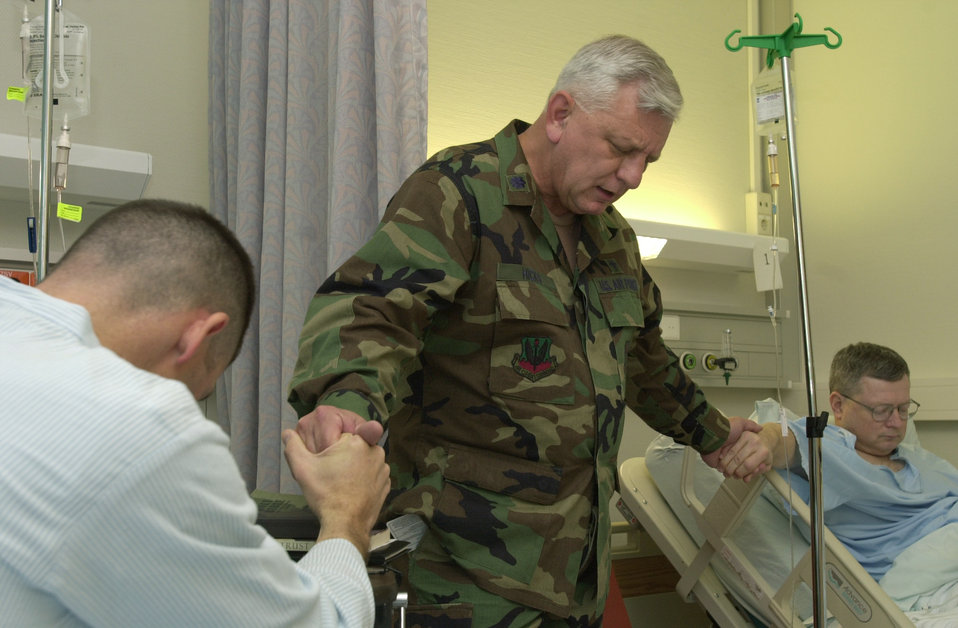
Guard chaplains minister to wounded troops

LANDSTUHL REGIONAL MEDICAL CENTER, Germany -- Alabama Air National Guard Chaplain (Lt. Col.) Robert Hicks prays with two U.S. servicemembers here. The Baptist minister is assigned to the hospital to comfort Guard troops who have been injured in Iraq and Afghanistan.